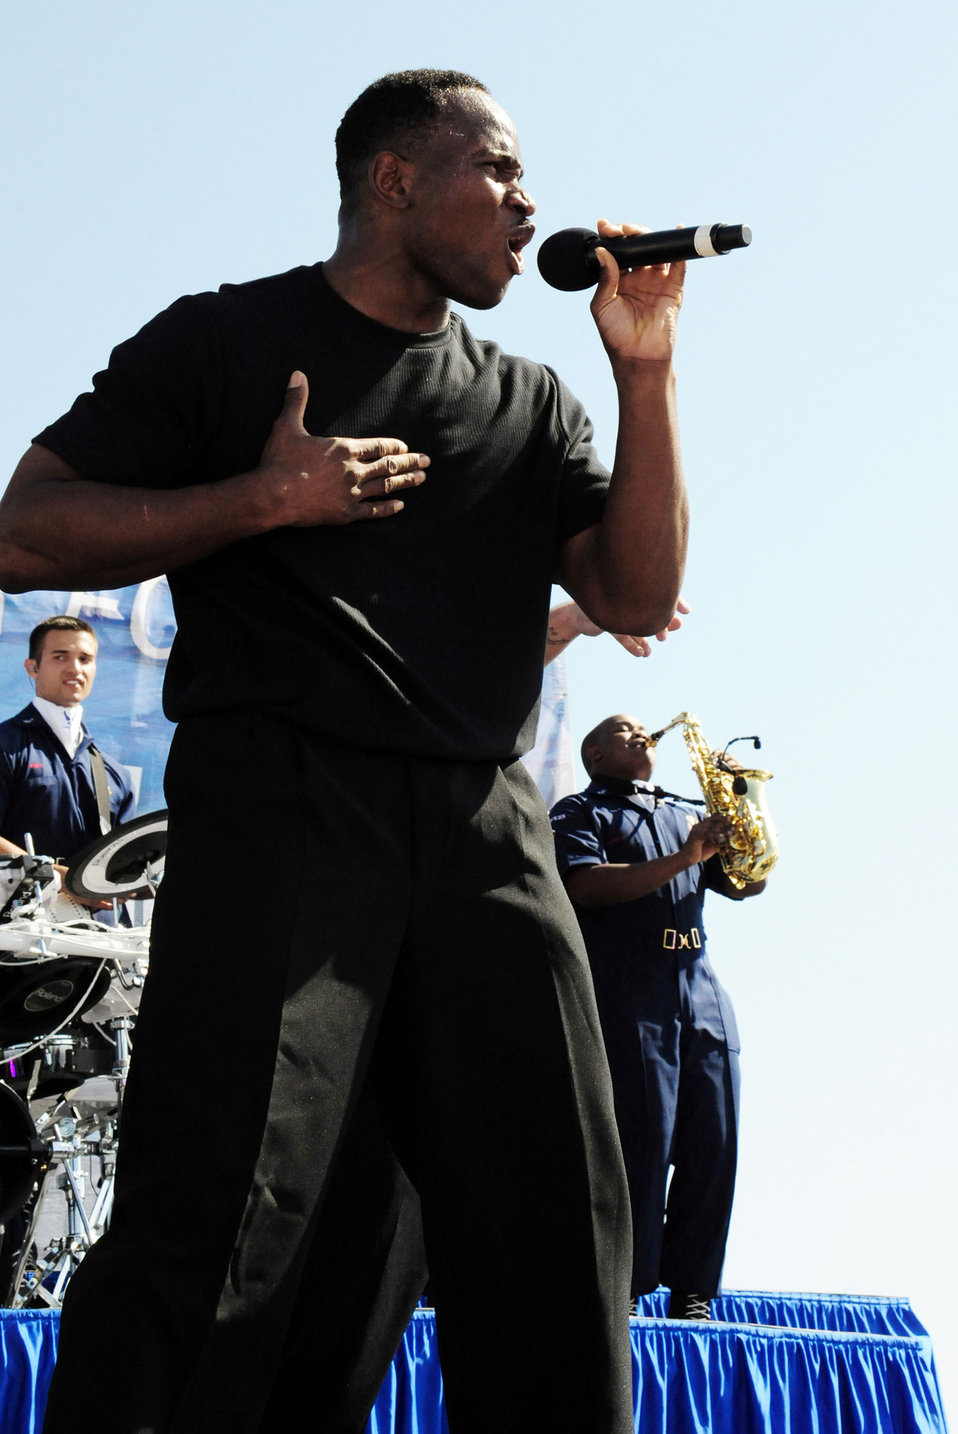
Airman reunites with Tops In Blue husband in Kyrgyzstan

Staff Sgt. Wendell Boone Jr., a vocalist with Tops In Blue, performs during the second show of the 2009